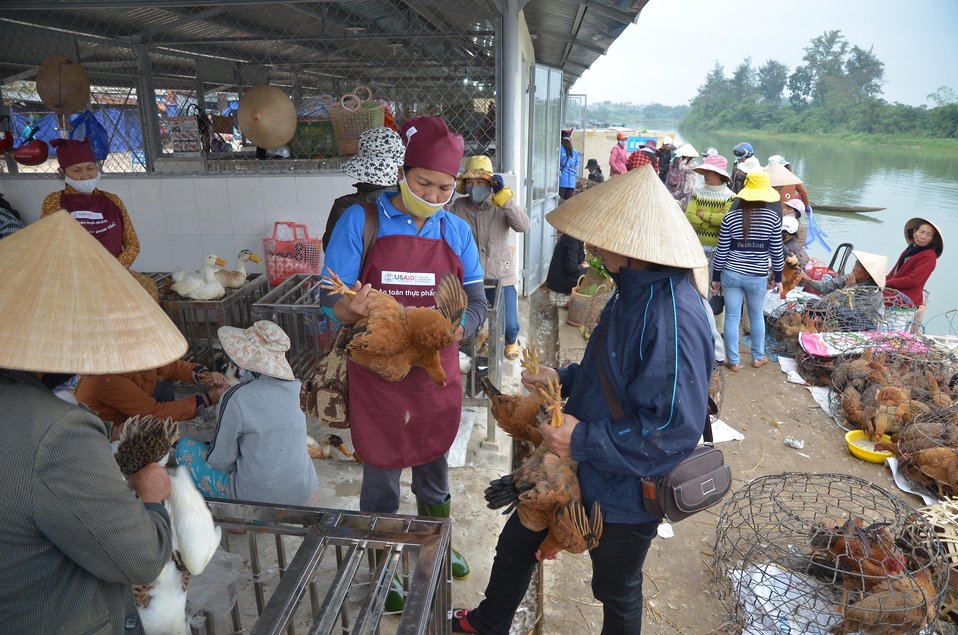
Disease Risk Reduction in Dong Ha Poultry Market, Quang Tri

Photo by Jens Peter Dalsgaard/USAID's Avian and Pandemic Influenza Initiative project team; December 5, 2011